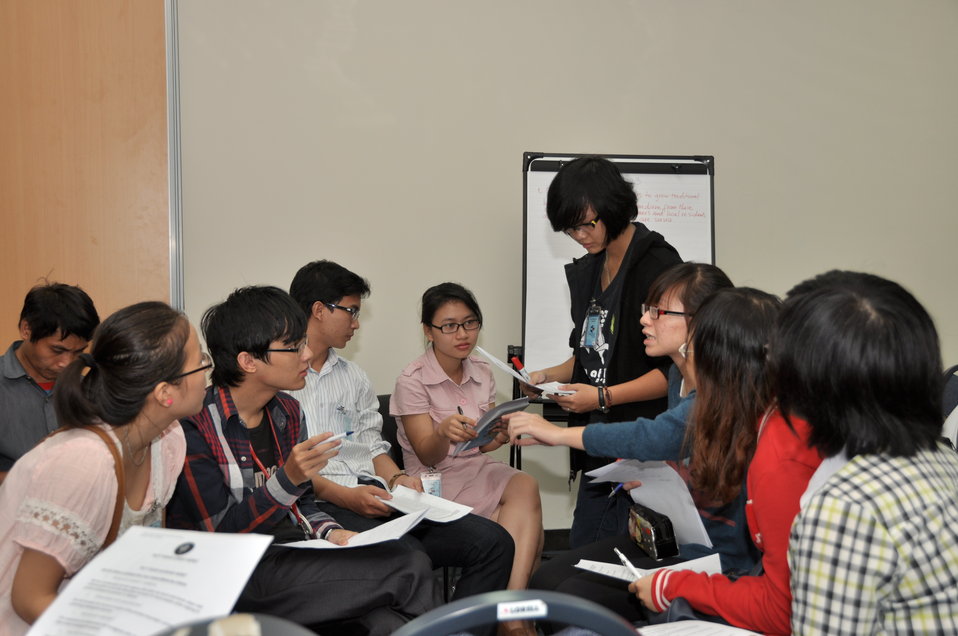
Vietnamese university students join the Business Plan Mashup exercise

Photo: @USAIDVietnam, November 16, 2012